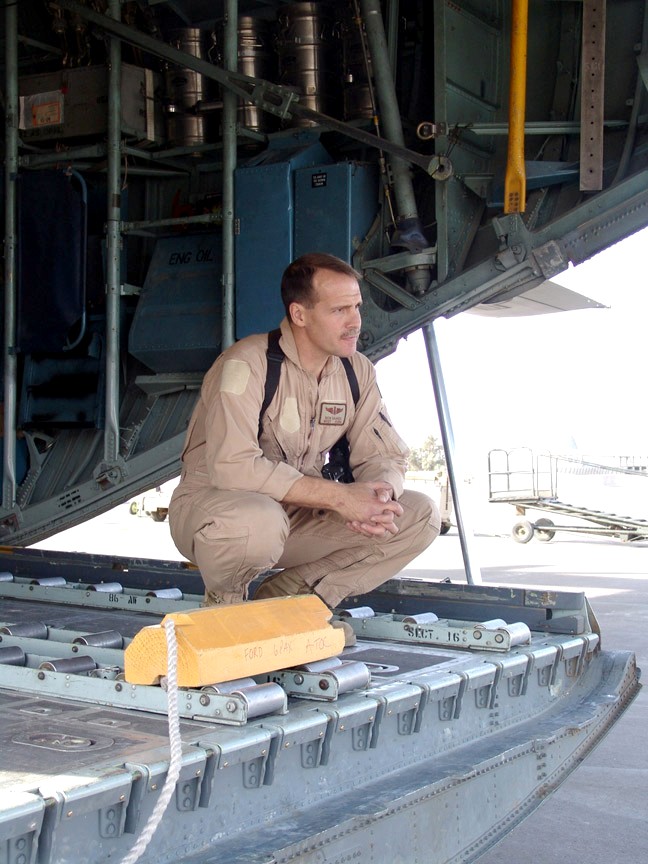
Loader in waiting

SOUTHWEST ASIA -- Master Sgt. Richard Baarda waits on the ramp of a C-130 Hercules for a pallet of cargo to be brought onboard. He and other Airmen of the 746th Expeditionary Airlift Squadron and its sister squadron, the 386th EAS, provide tactical airlift supporting Operation Iraqi Freedom as part of the 386th Air Expeditionary Wing. Sergeant Baarda is a loadmaster.